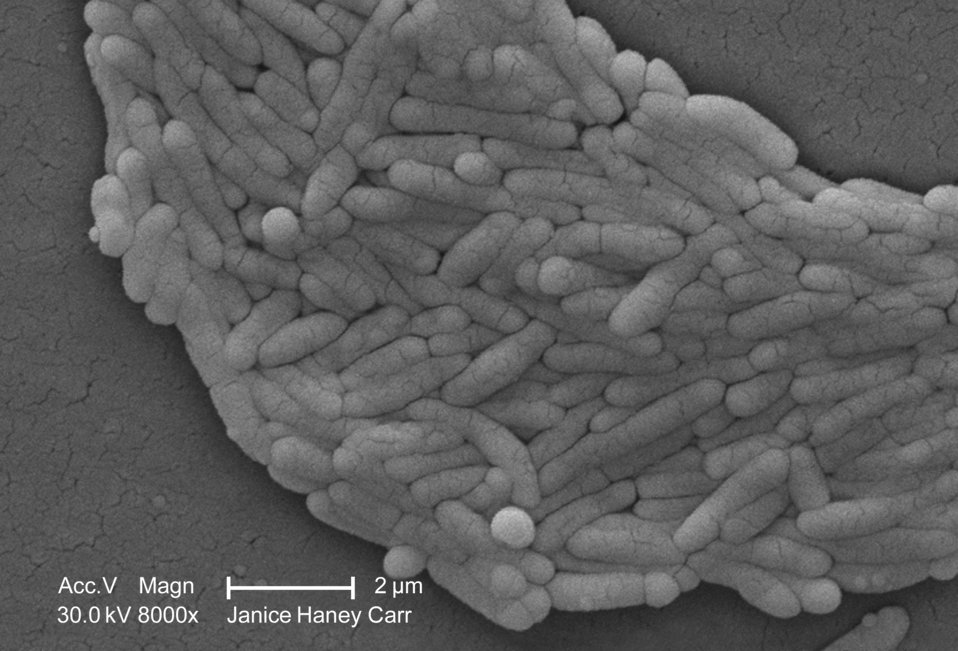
Under a moderately-high magnification of 8000X, this scanning electron micrograph (SEM) revealed the presence of a large grouping of Gram-negative Salmonella typhimurium bacteria that had been isolated from a pure culture. See PHIL 10981 for a colorized version of this image. How can Salmonella infections be treated??